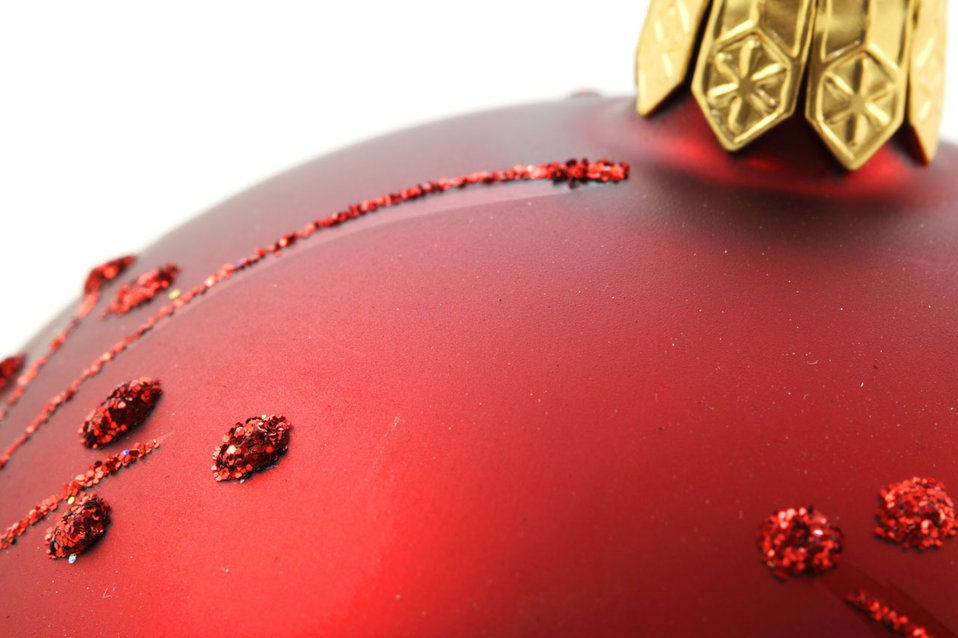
Christmas bauble

Close-up of red christmas bauble.